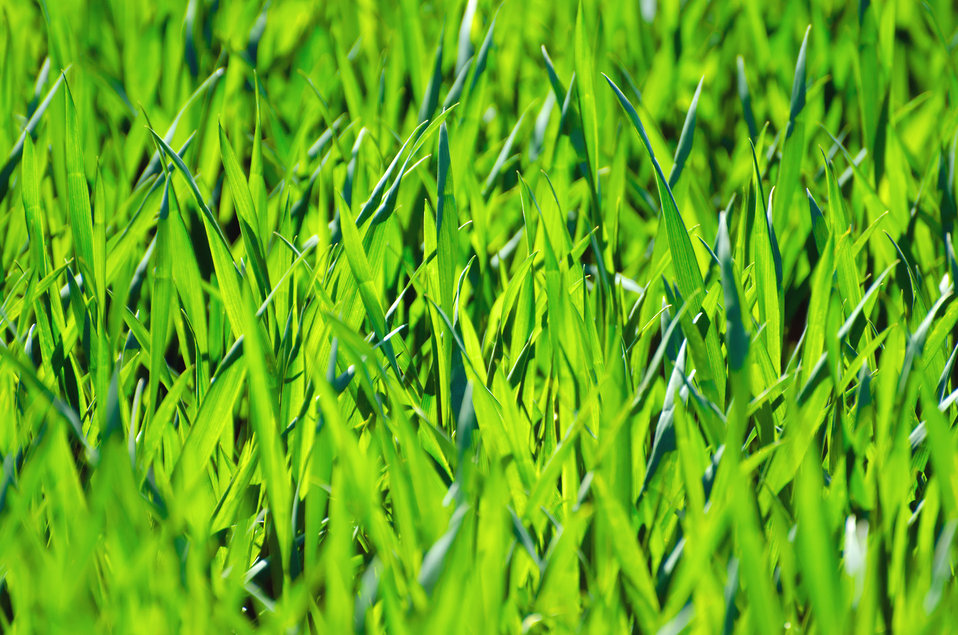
Grass - macro background.